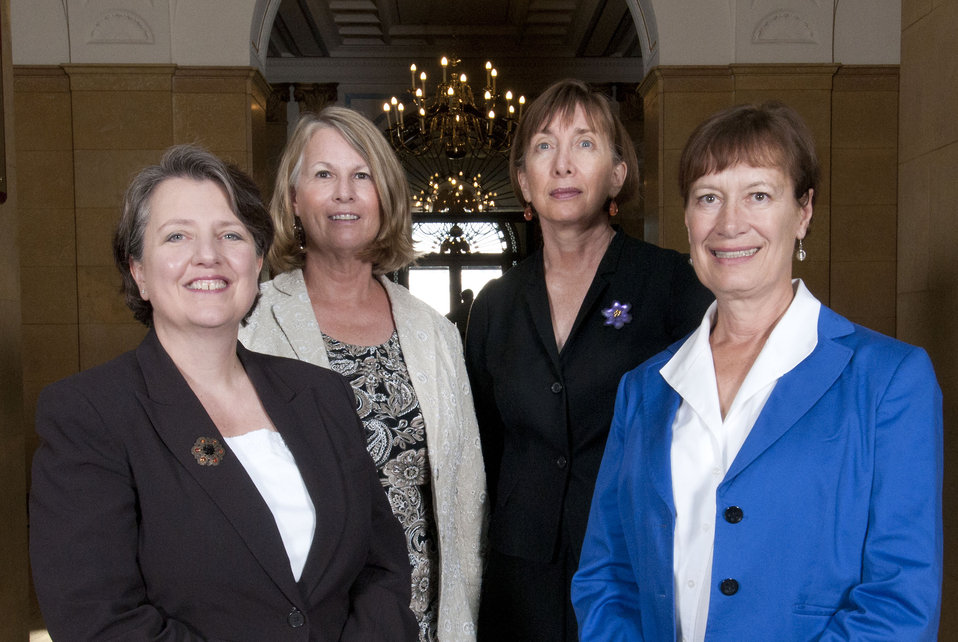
Tacoma Hydropower Trial Team, Office of the General Counsel, Golden, CO. Lois G. Witte, Group Leader. For developing outstanding legal precedent on behalf of the Forest Service in USDA’s first-ever administrative hearing under the Energy Policy Act of 2005. On September 14, 2011 in the patio of the Whitten Building Patio of the US Department of Agriculture in Washington, DC.